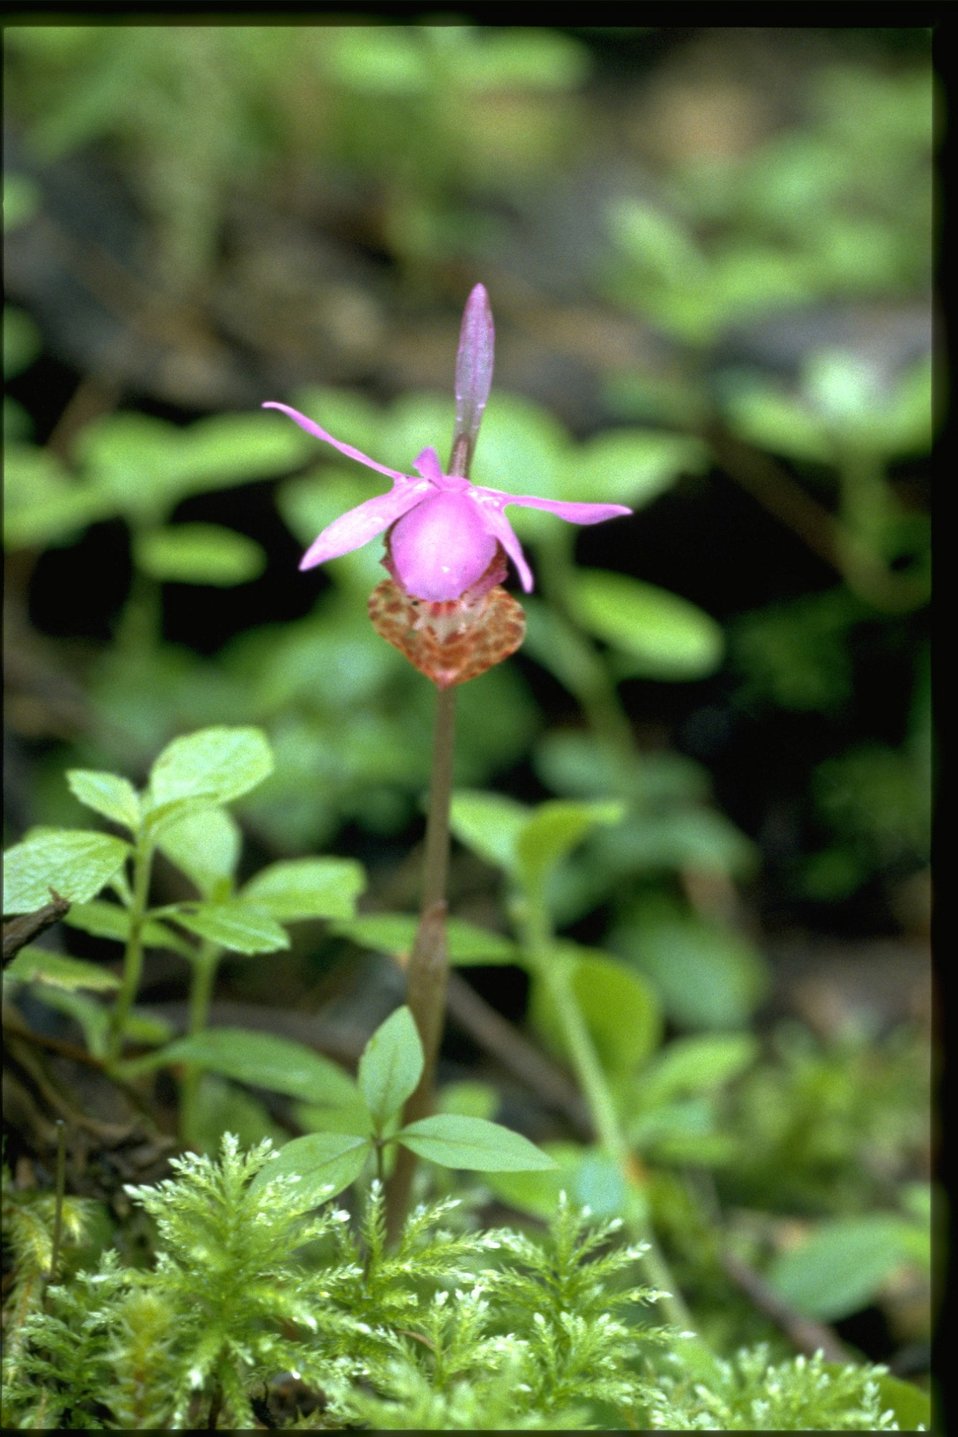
Medium shot of Calypso bulbosa.